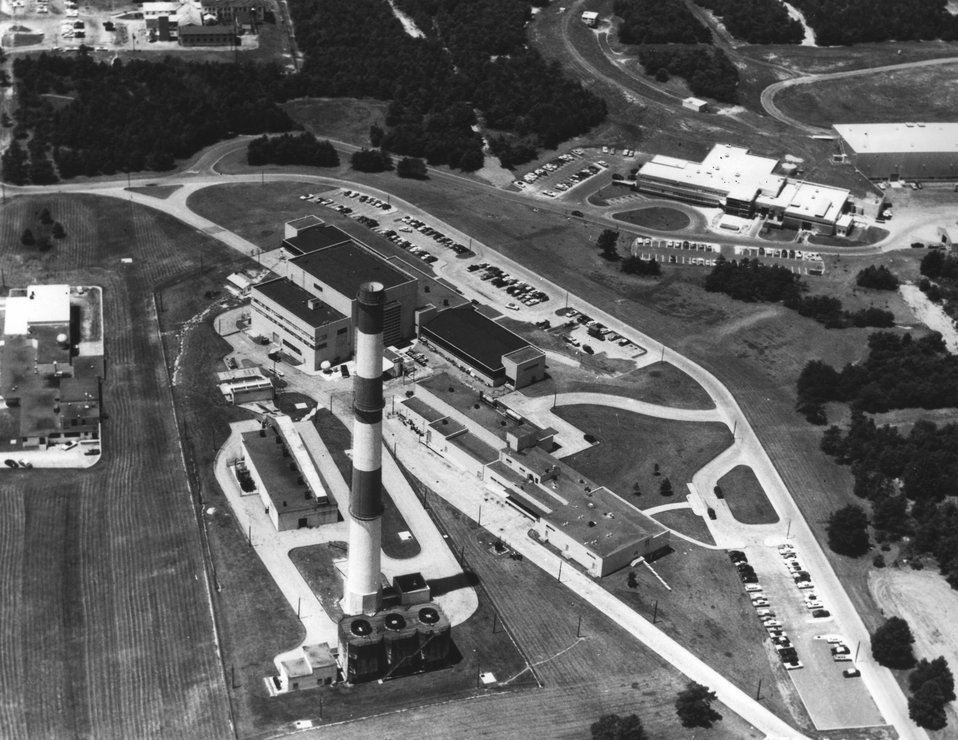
Aerial view of the Brookhaven National Laboratory reactor complex with stack and fan houses in left foreground, and Hot Laboratory in the right foreground. c. 1959